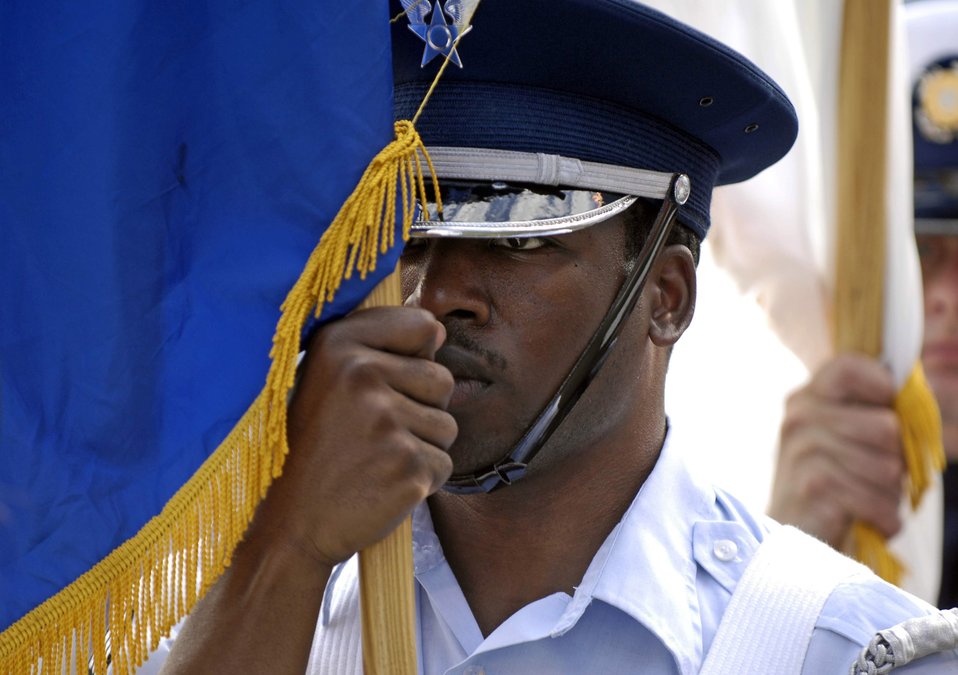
Airmen support Pro Bowl

Senior Airman Armond Veazie holds the Air Force flag as part of a joint service honor guard during the Pro Bowl Feb. 10 at the Aloha Stadium in Hawaii. Servicemembers from all branches of the military in Hawaii participated in the Pro Bowl activities. The Pro Bowl brings together the top players in the American and National conferences of the National Football League.